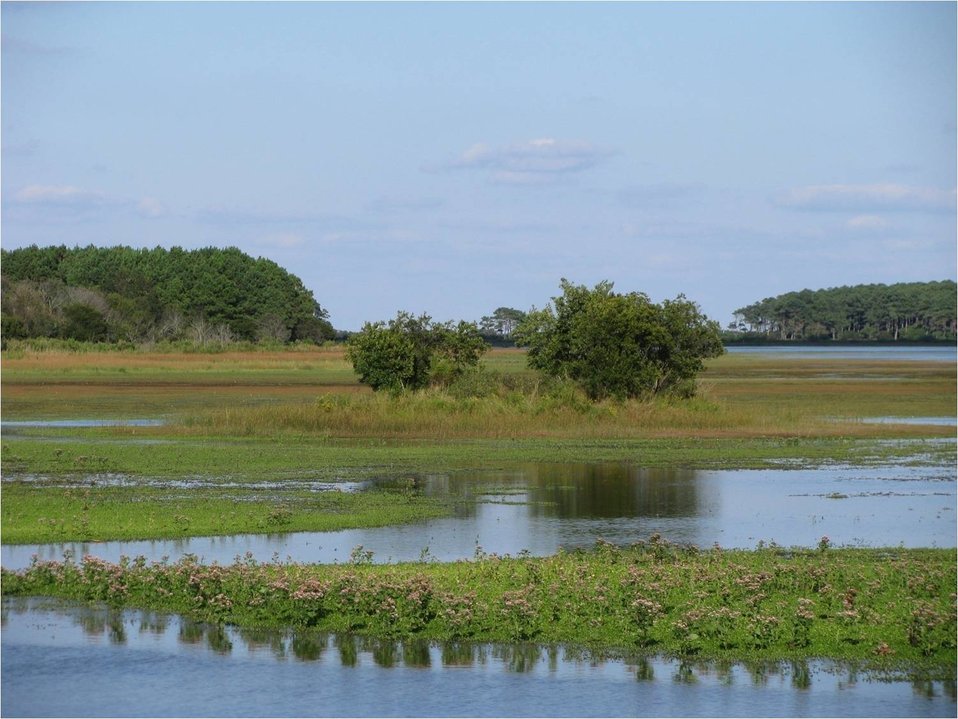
Chincoteague National Wildlife Refuge - salt water marsh